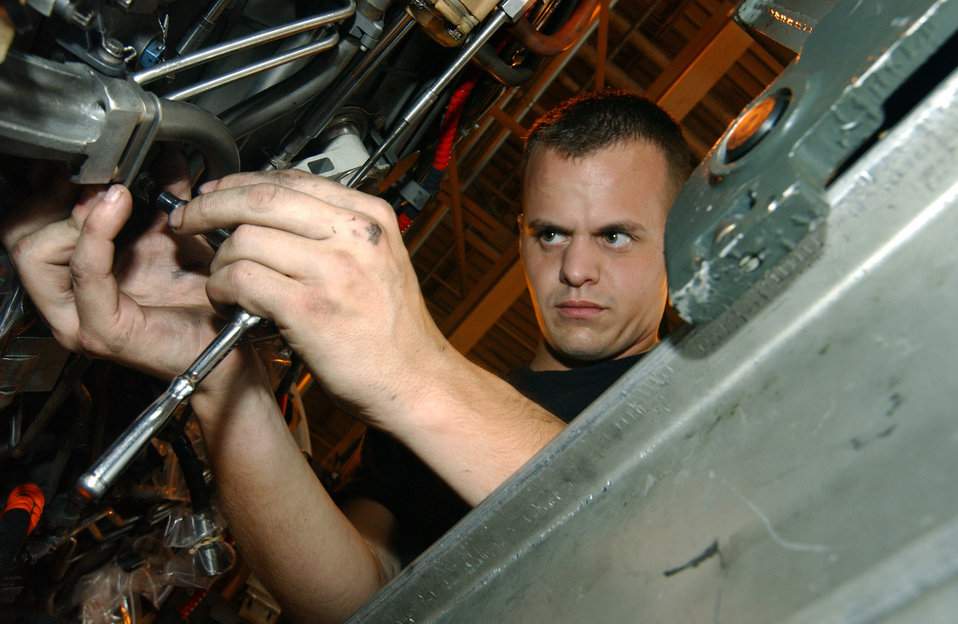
Getting the job done

SHAW AIR FORCE BASE, S.C. -- Airman 1st Class Vincent Cooper lines up a table clamp on a gear box for an F110 engine here Aug. 31. Airman Cooper is assigned to the 20th Maintenance Group.